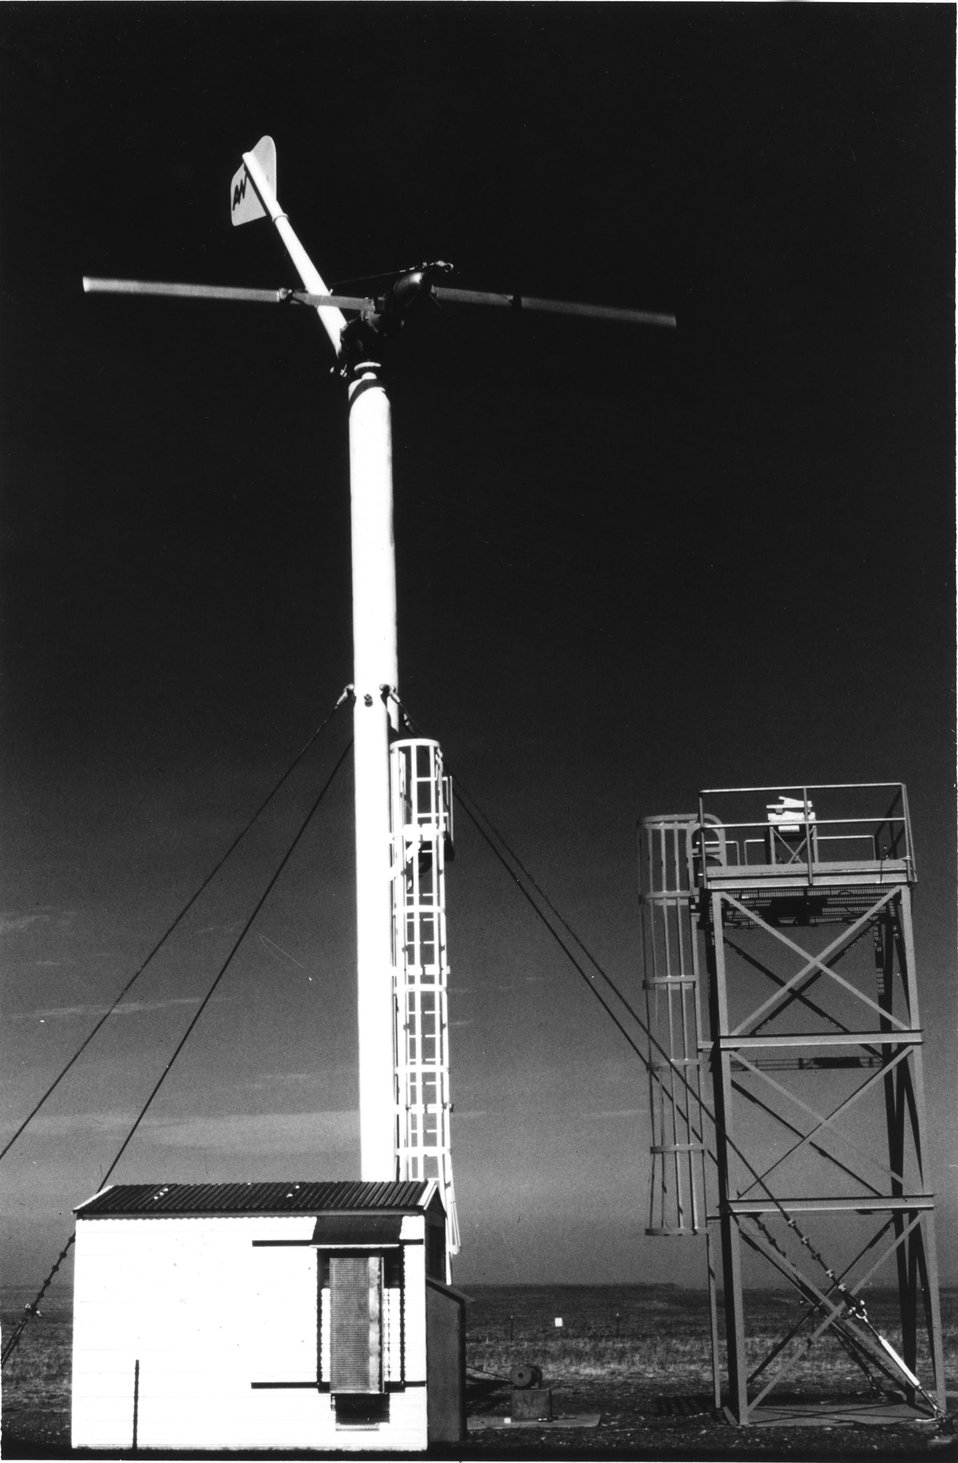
This two-bladed Aerowatt wind turbine generator was one of the first of a series of commercially produced wind machines to be installed and tested at the U.S. Department of Energy's Rocky Flats facility near Denver, Colorado. c. 1977